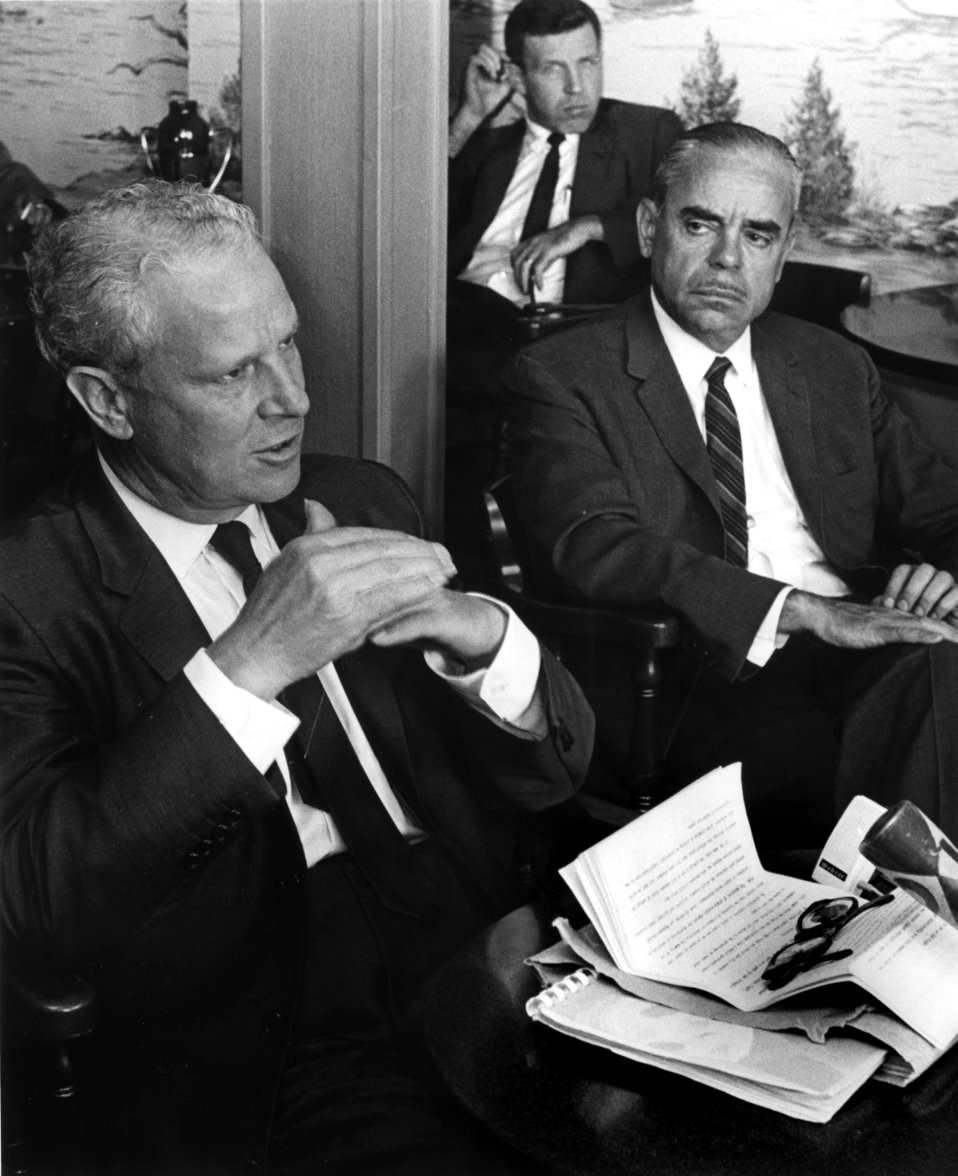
Sen Al Gore Sr. and AEC Manager Sam Sapirie Oak Ridge

64-0515-7a DOE photo Ed Westcott 1968 Oak Ridge Tennessee